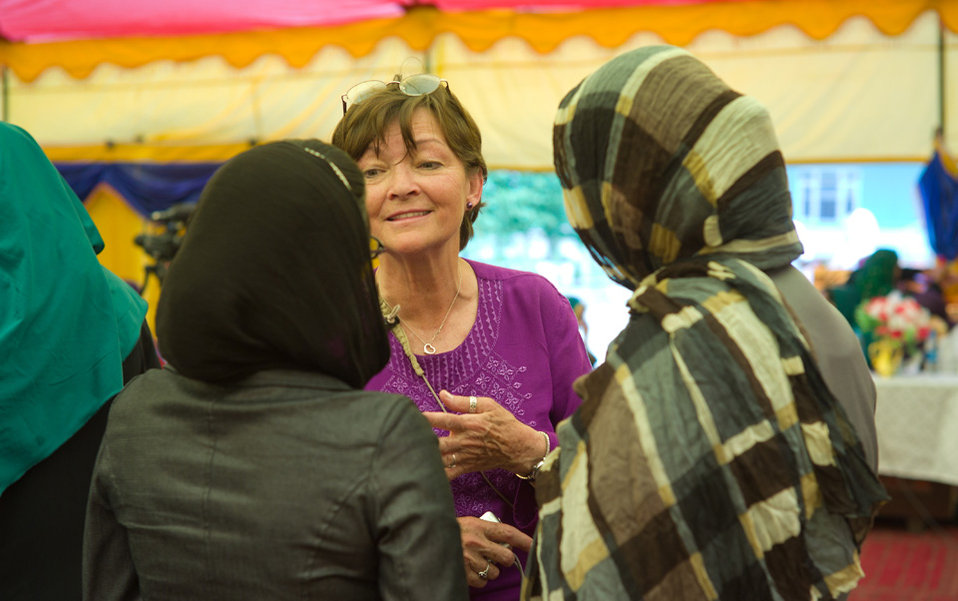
Nancy Hendricks